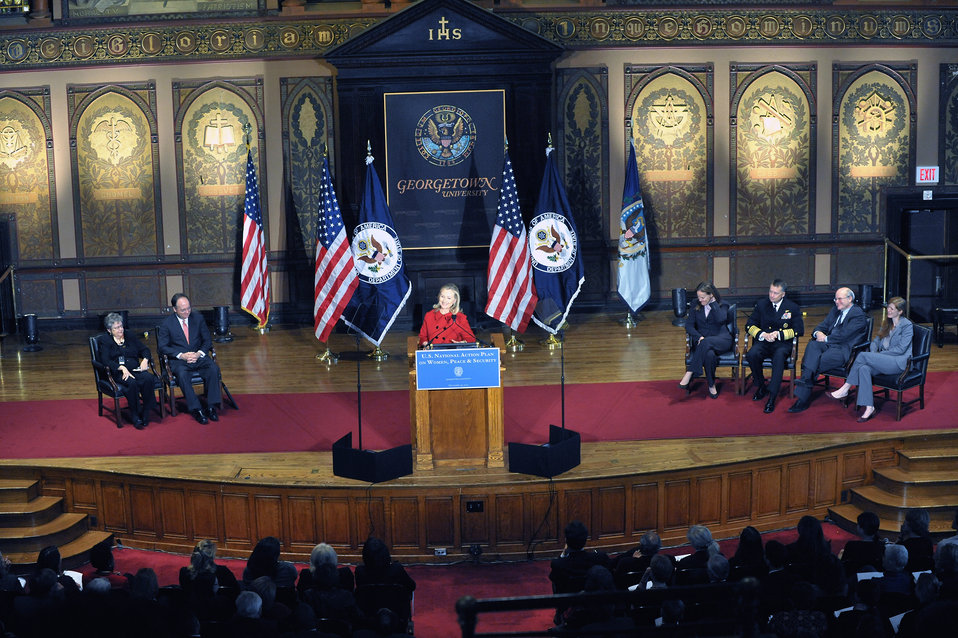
Secretary Clinton Delivers Remarks on Women, Peace, and Security

U.S. Secretary of State Hillary Rodham Clinton discusses new efforts across the U.S. government to support women's participation in peace and security, including plans to better protect women from conflict-related violence and promote women's leadership and perspectives in all aspects of conflict prevention, resolution, relief, and recovery, at Georgetown University on December 19, 2011.